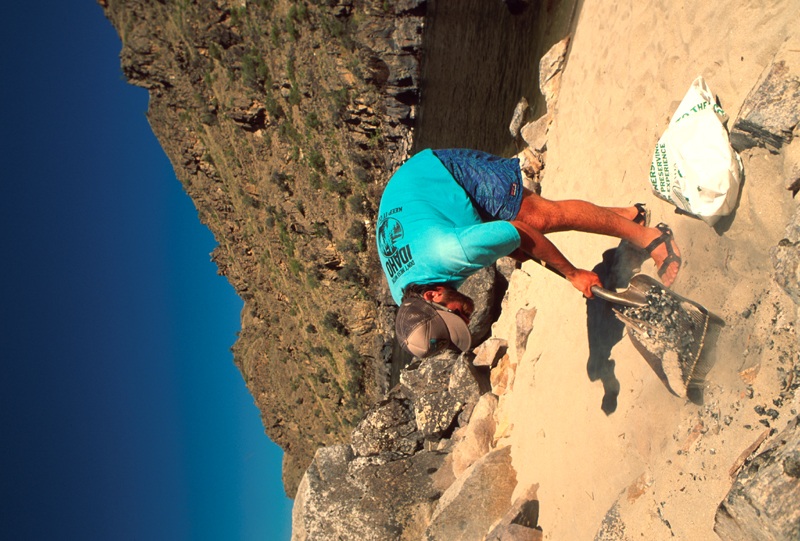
Camping Lower Salmon River Cottonwood Field Office UCSC Upper Columbia Salmon Clearwater District